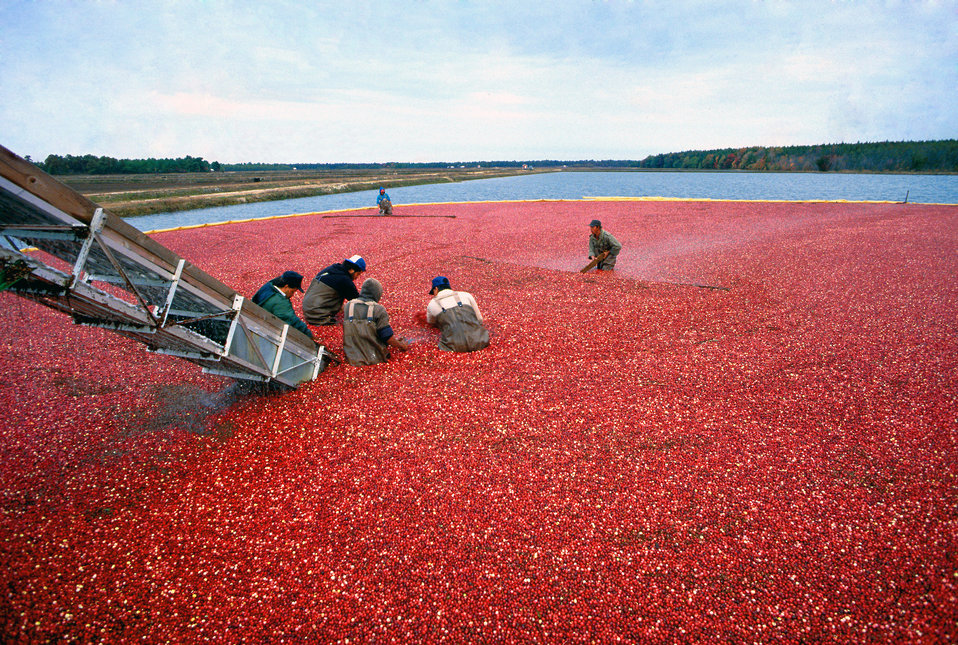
Cranberries are harvested in New Jersey.